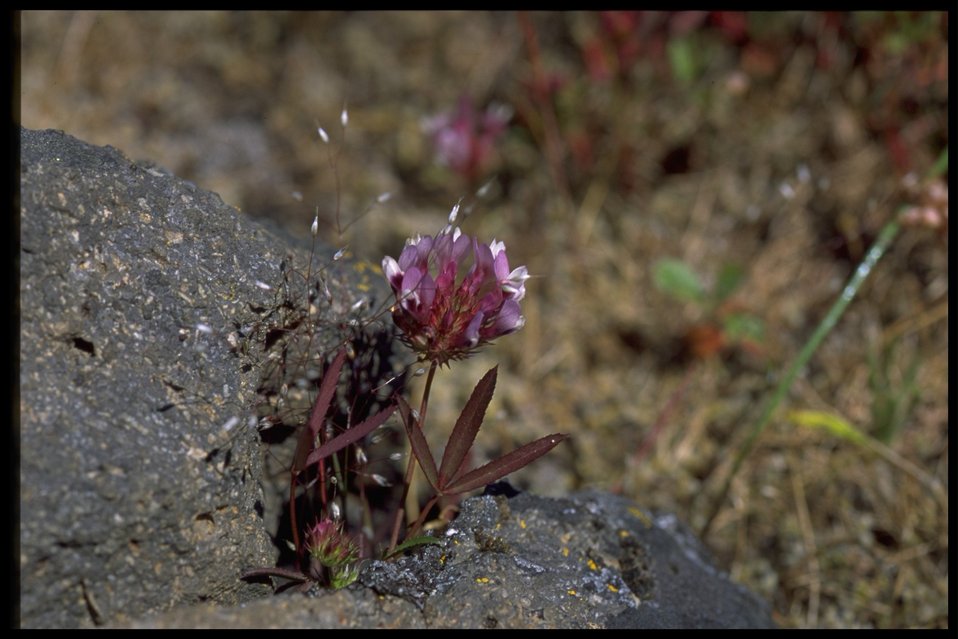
Closeup shot of Trifolium depauperatum.